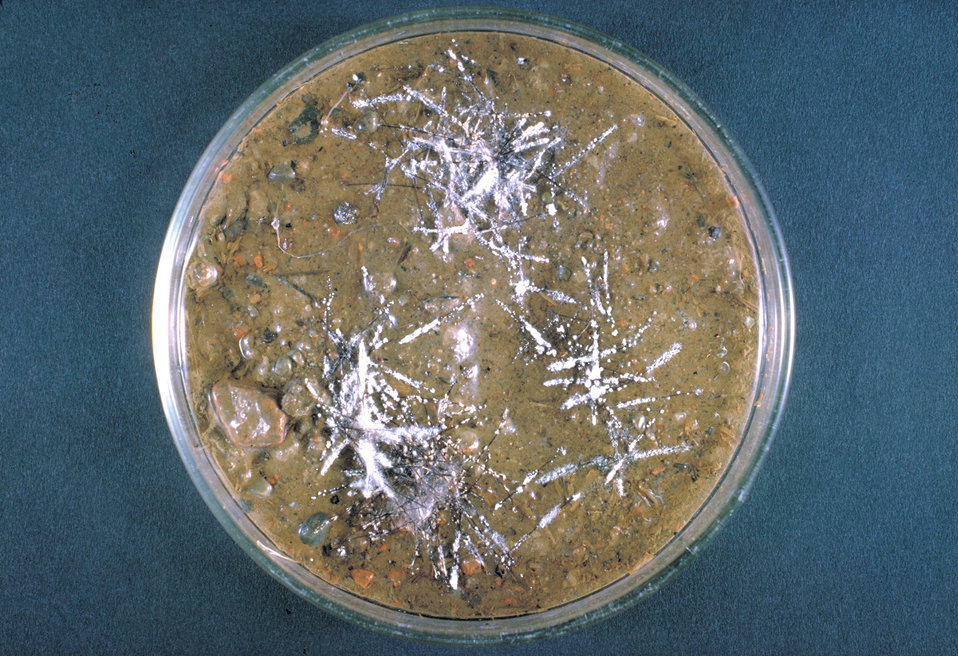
His hair-plate culture is growing the fungus Trichophyton terrestre.